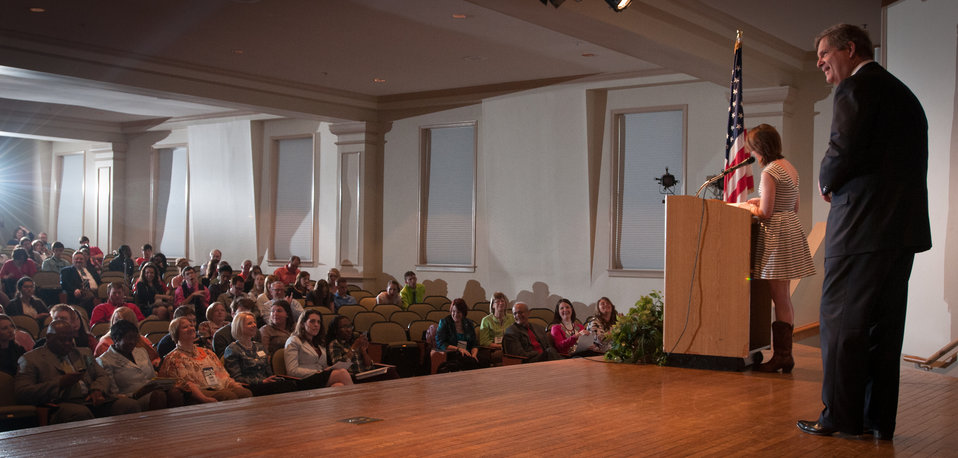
U.S. Department of Agriculture (USDA) Secretary Tom Vilsack smiles as he receives a warm welcome before he delivers the keynote remarks to approximately 300 youth members, Extension Educators and 4-H Adult Volunteers from across the nation, as well as U.S. Territories at the 2013 National 4-H Conference, on Monday, April 8, 2013 in Chevy Chase, MD. Also speaking at the event is Agriculture Departmental Management Office of Advocacy and Outreach Director Carolyn Parker and National Institute of Food and Agriculture Director Dr. Sonny Ramaswamy. The youth delegates are in grades 10-12 (15-19 years old). The purpose of the conference is to 1) engage 4-H youth in personal development experiences that will increase knowledge, resources, and skills; 2) discuss topics affecting youth and 4-H programming nationwide; and 3) empower and mobilize 4-H youth to create positive social change in their communities in a meaningful and genuine way. The conference also reinforces the rich history of 4-H and its valuable tie to USDA, Cooperative Extension and the Land-Grant University System.